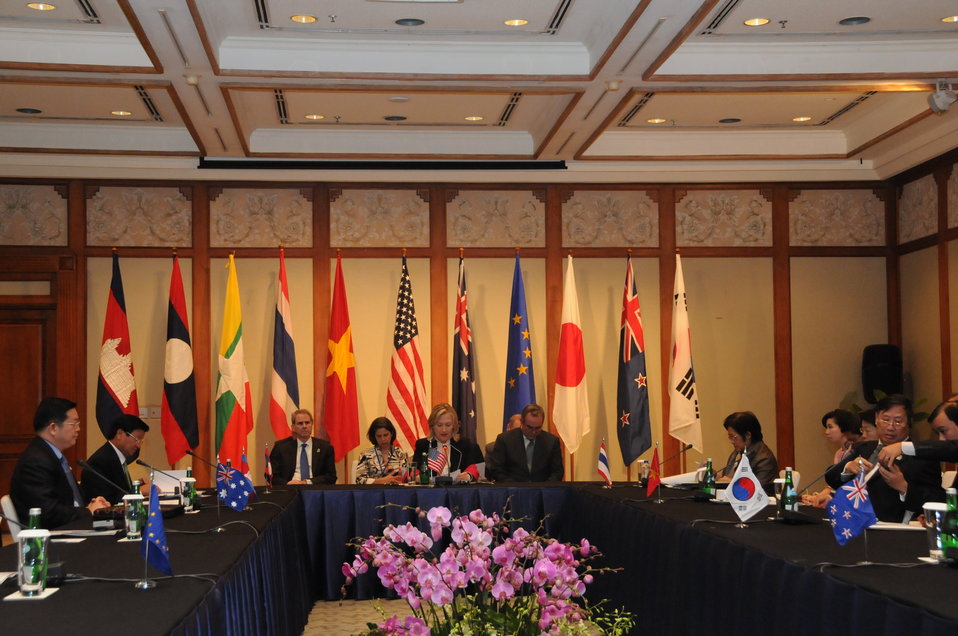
Secretary Clinton Participates in the U.S.-Lower Mekong Ministerial Meeting

U.S. Secretary of State Hillary Rodham Clinton participates in the U.S.-Lower Mekong Ministerial Meeting in Bali, Indonesia, on July 22, 2011. Also pictured are: Under Secretary of State for Global Affairs and Democracy Maria Otero, left of the Secretary; U.S Ambassador to ASEAN David Carden, left of Under Secretary Otero; and Assistant Secretary of State for East Asian and Pacific Affairs Kurt Campbell, right of the Secretary. Seated on the left panel, left to right, are: Cambodian Representative and Laos Foreign Minister Thongloun Sisoulith, and seated on the right panel, left to right, are: Thai Foreign Minister Chitriya Pinthong and Vietnam Foreign Minister Pham Gia Khiem.